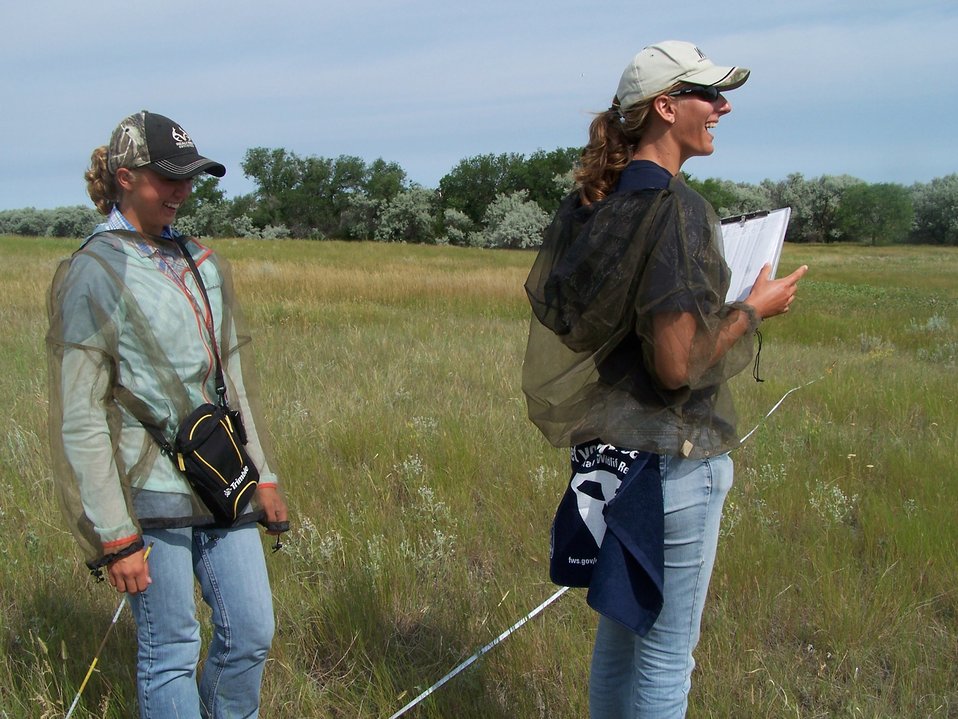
Get Your Goose On!

Bowdoin NWR Summer Technicians doing vegetation transects with the GYGO towel